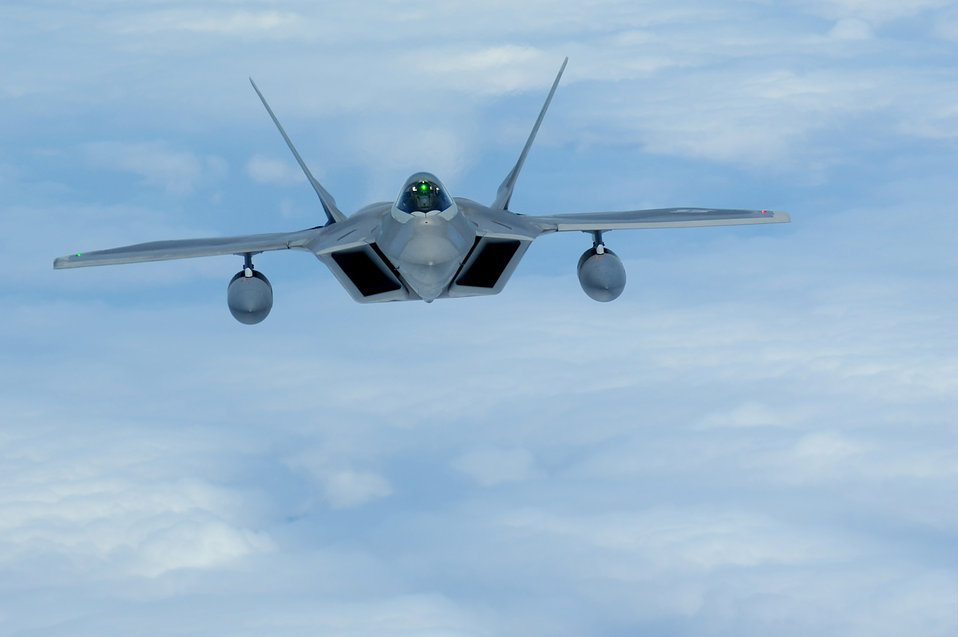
Hickam's total force integration

An F-22 Raptor flies over the Pacific Ocean July 2, 2010, on its way to its new home at Joint Base Pearl Harbor-Hickam, Hawaii.